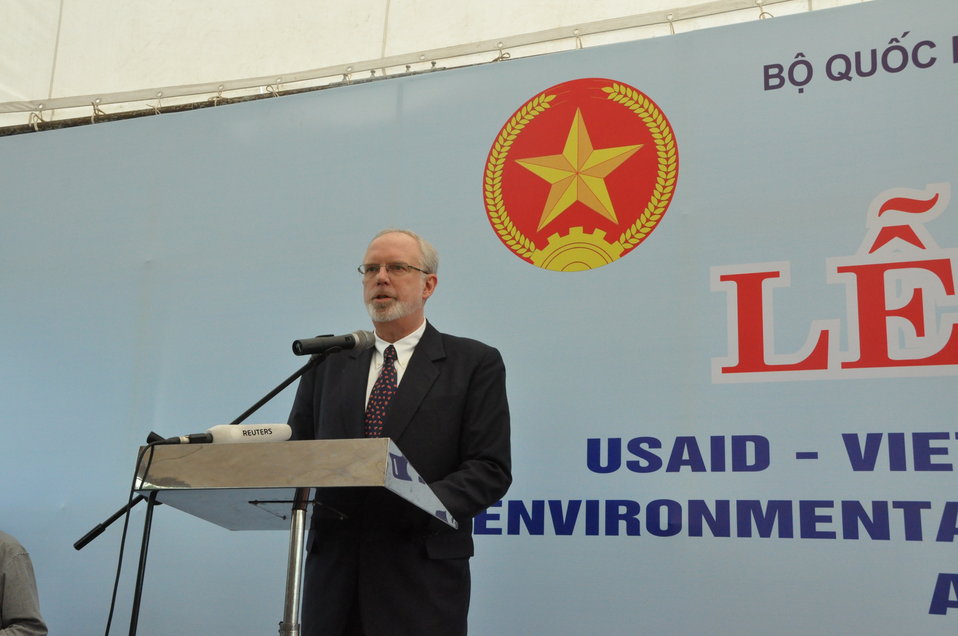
U.S. Ambassador David B. Shear at the project launch

August 9, 2012, Photo: USAIDVietnam